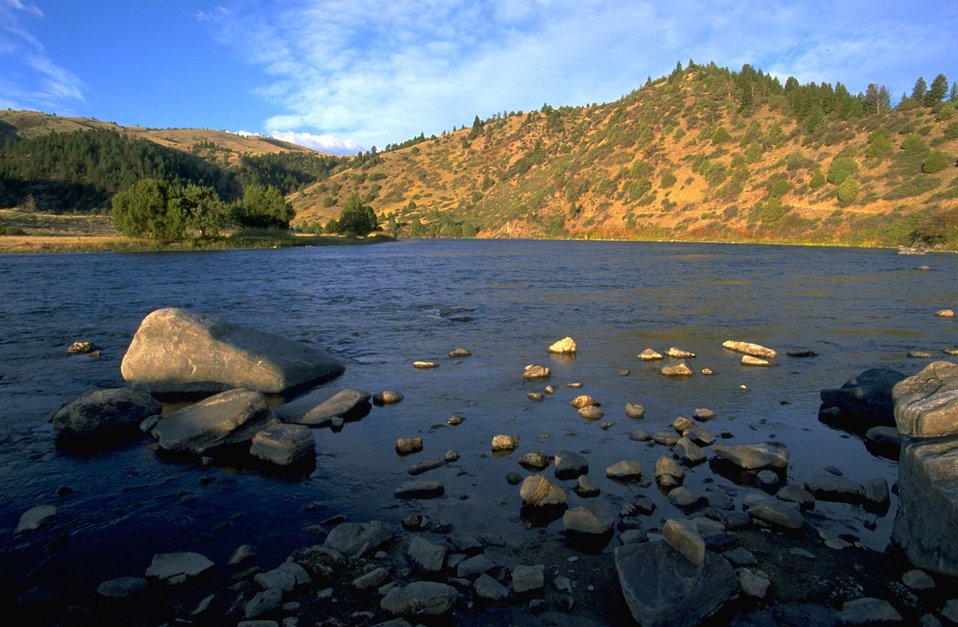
The Madison River in the late afternoon light